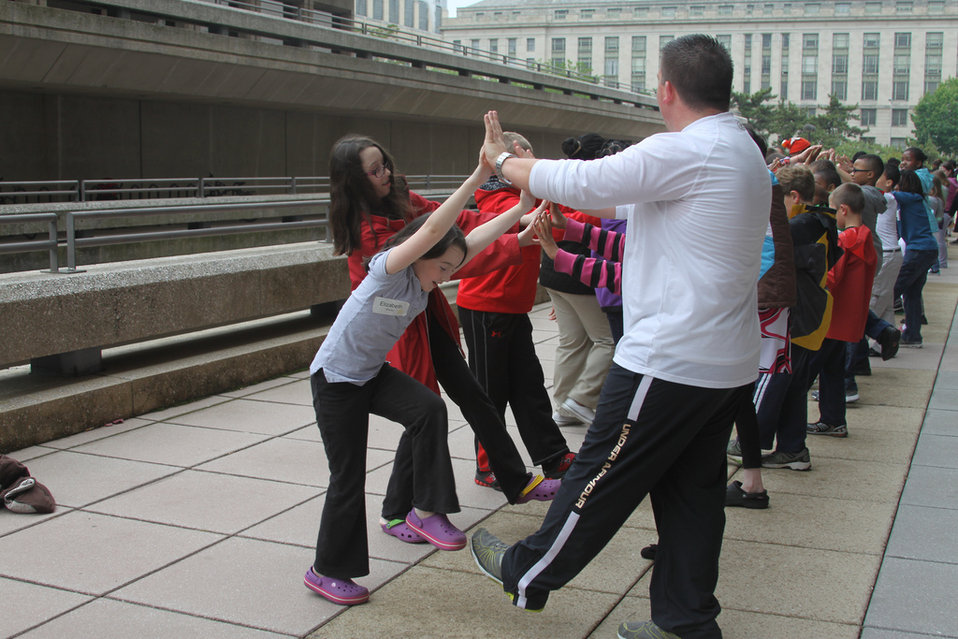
Fitness Outside